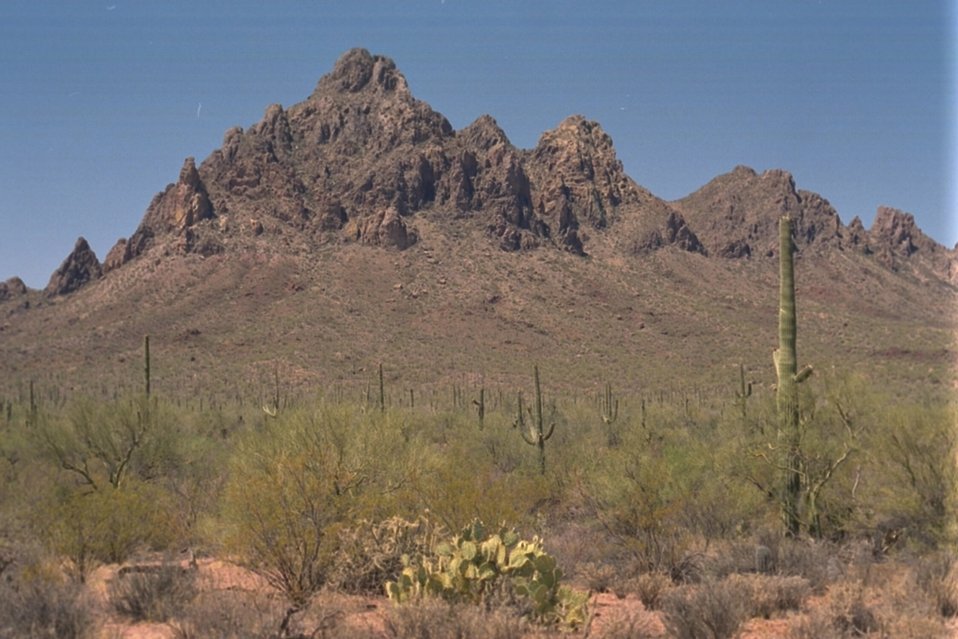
A beautiful mountain view of the Ragged Top Mountain, described as the biological and geological crwon jewel of the Silver Bell Mountains in the Ironwood Forest National Monument.